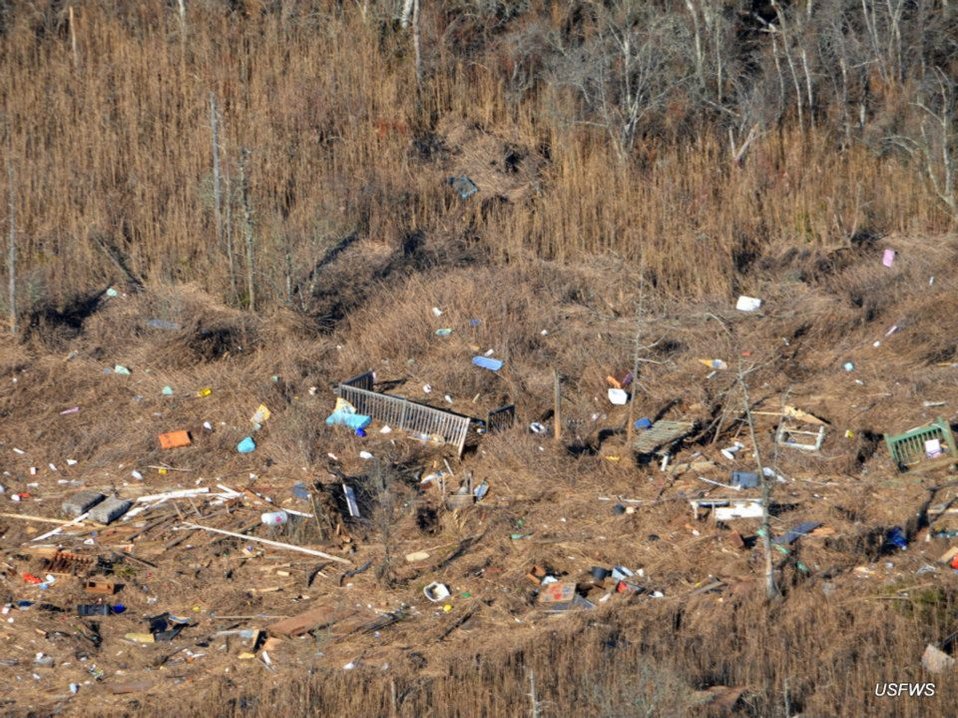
Hurricane Sandy debris at Edwin B. Forsythe Refuge

A big challenge for staff at Edwin B. Forsythe National Wildlife Refuge in New Jersey: cleaning up of tons of debris deposited by Hurricane Sandy in hard-to-access areas. (USFWS)